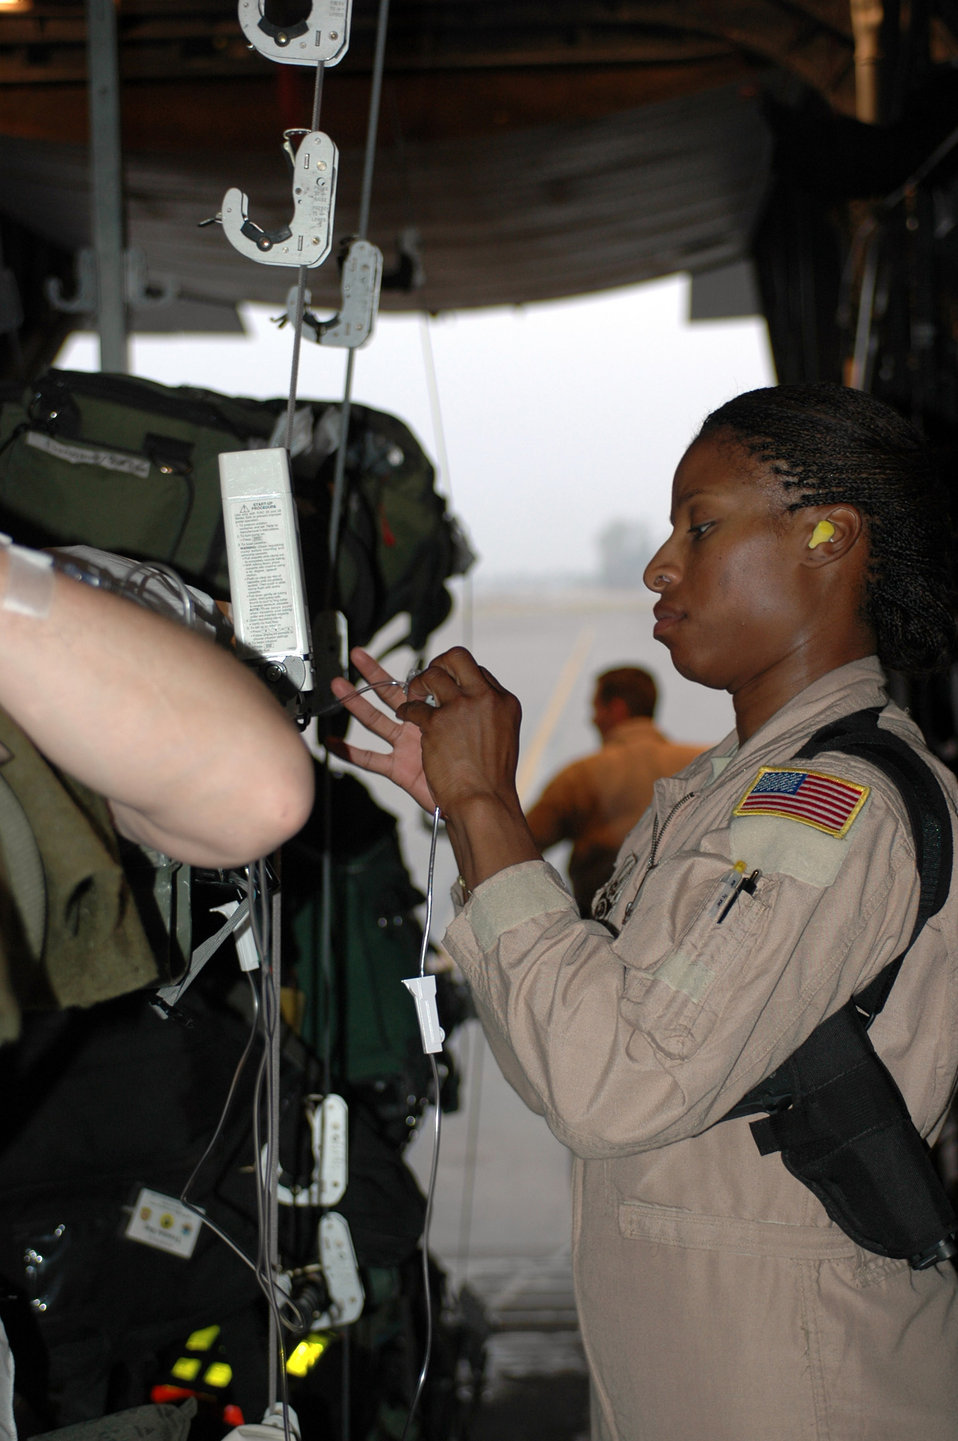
Aeromedical teams provide comfort, care in the air

Staff Sgt. Christine Hall hooks up an IV for a patient June 13 at Balad Air Base, Iraq. The 379th EAES was sent on a mission to Al Asad Air Base, Iraq, to pick up patients and take them to Balad AB and another base in Southwest Asia. Wounded warriors were also picked up at Balad to be sent to Southwest Asia. Sergeant Hall is assigned to 379th Expeditionary Aeromedical Evacuation Squadron.